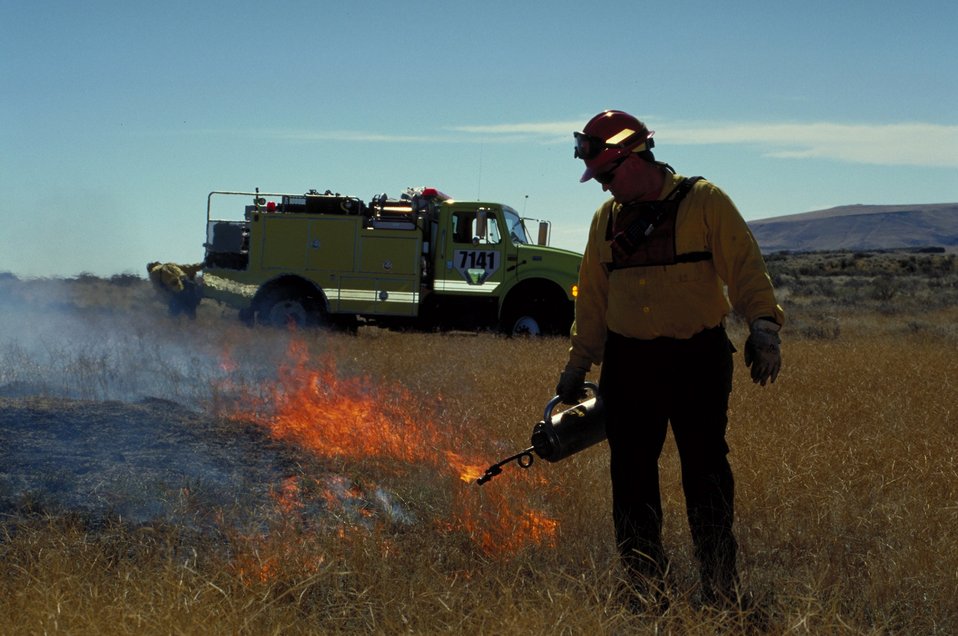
Prescribed burn Fire Season 2000 Lower Snake River District LSRD